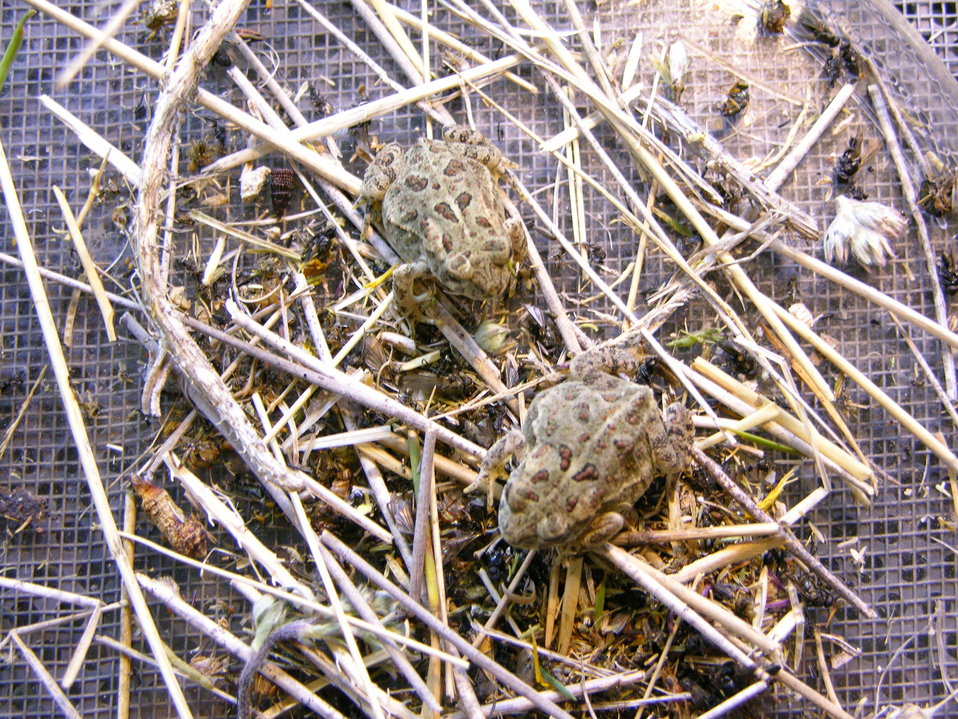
Wyoming Toad

The Saratoga Fish Hatchery does everything it can to duplicate the toads natural habitat by providing a marsh habitat.